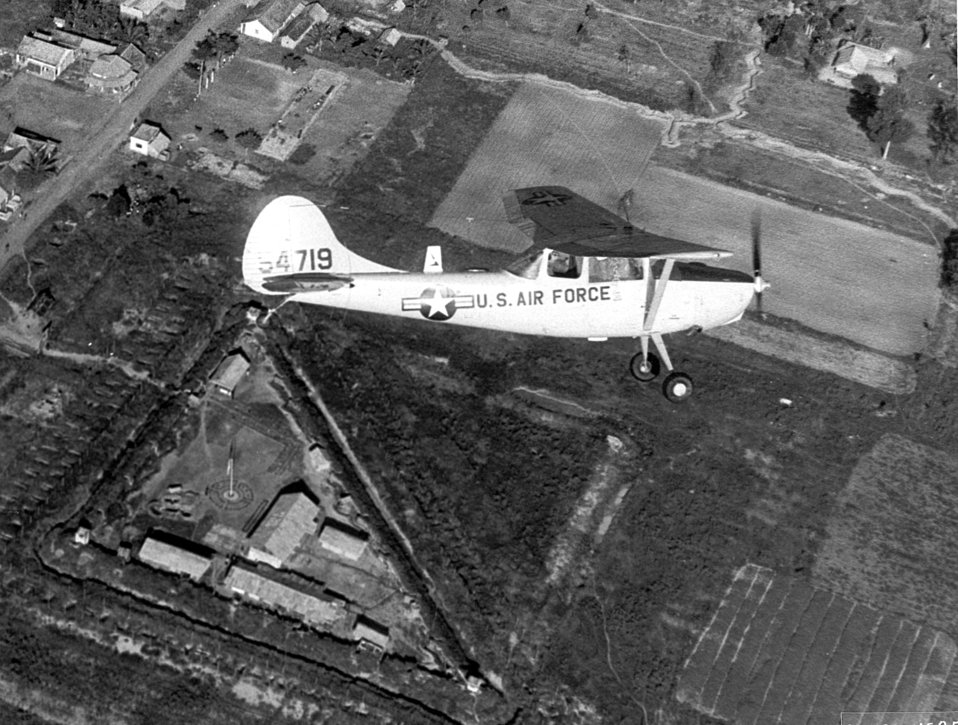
O1-E Bird Dog

1950's -- A Forward Air Controller O1-E